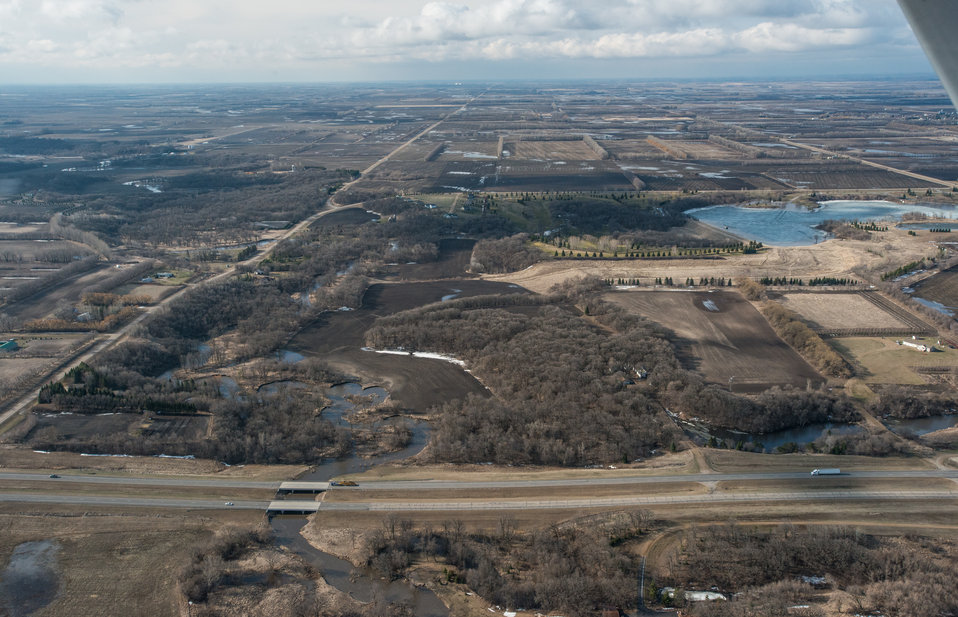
Larimore Dam, a Public Law PL83-566 Small Watershed Program, in Grand Forks County, ND, on Wednesday, May 1, 2013. To learn about the Red River Basin Initiative, see www.mn.nrcs.usda.gov/news/features13/RRBI.html USDA Photo by Lance Cheung.